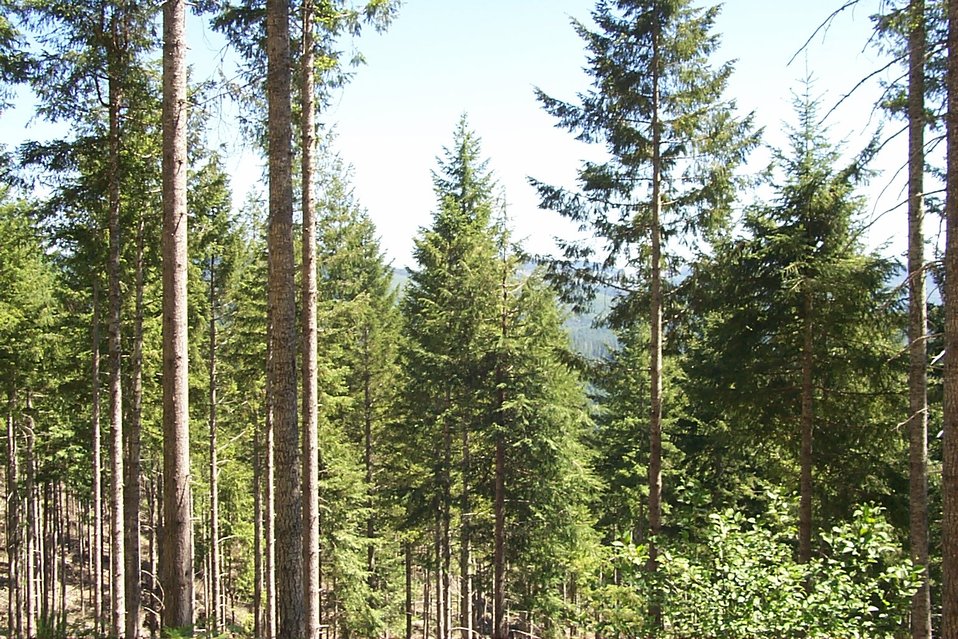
Camas East Timber Sale in Late Successional Reserve.